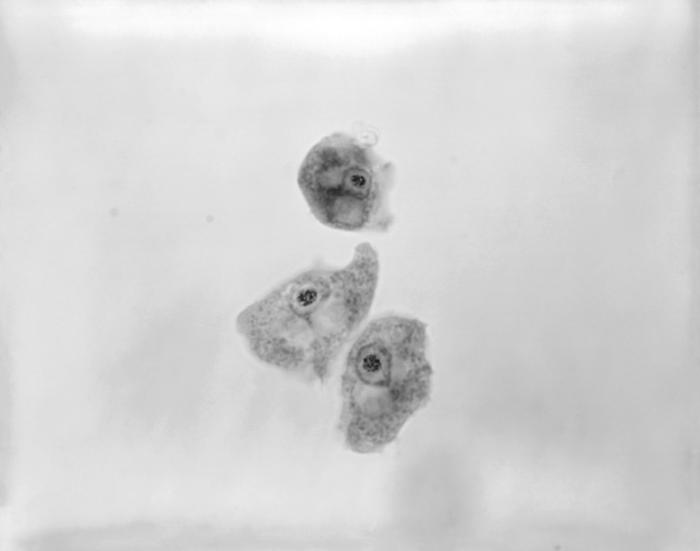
This 1973 photomicrograph depicted three Naegleria gruberi free-living amoebae. Free-living amoebae belonging to the genera Acanthamoeba, Balamuthia, and Naegleria, are important causes of disease in humans and animals.